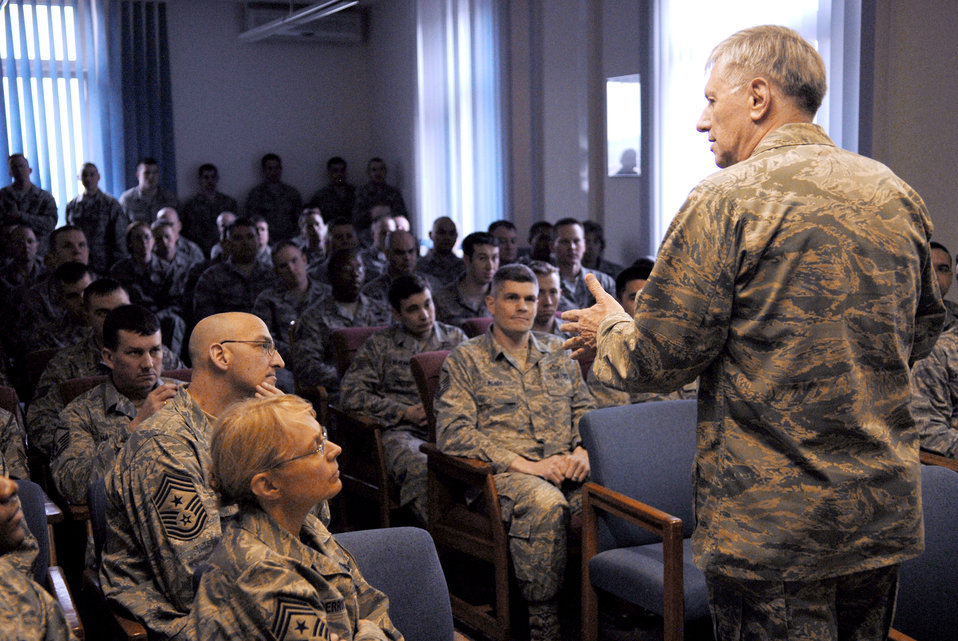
Visit to 435th Air Ground Operations Wing

Gen. Roger A. Brady, U.S. Air Forces in Europe commander, addresses members of the 4th Air Support Operations Group during a special commander's call March 16, 2020, at Wiesbaden Army Air Field, Germany.